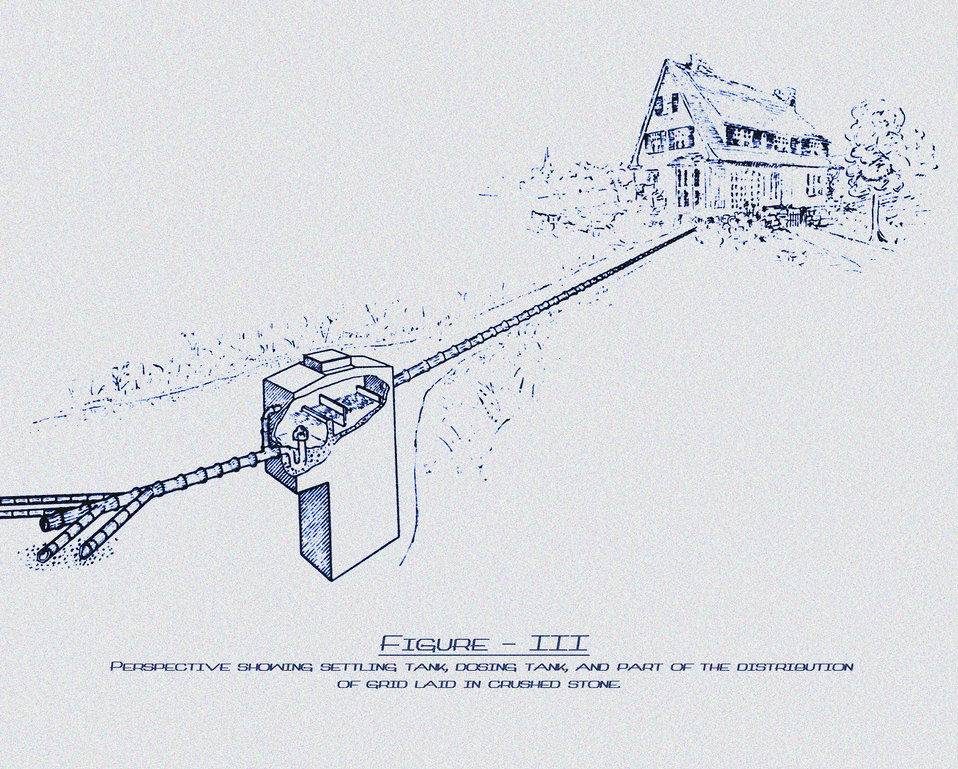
This historic diagram, which had been digitally enhanced and colorized, depicted one method of providing sewage disposal for farm homes. The waste emanating from the farm home was to be piped a safe distance away, and into a mechanism composed of a settling tank, dosing tank, and filters. Published in 1914, this was one of a series of instructional drawings used by the Minnesota Board of Health to train its state public health workers.